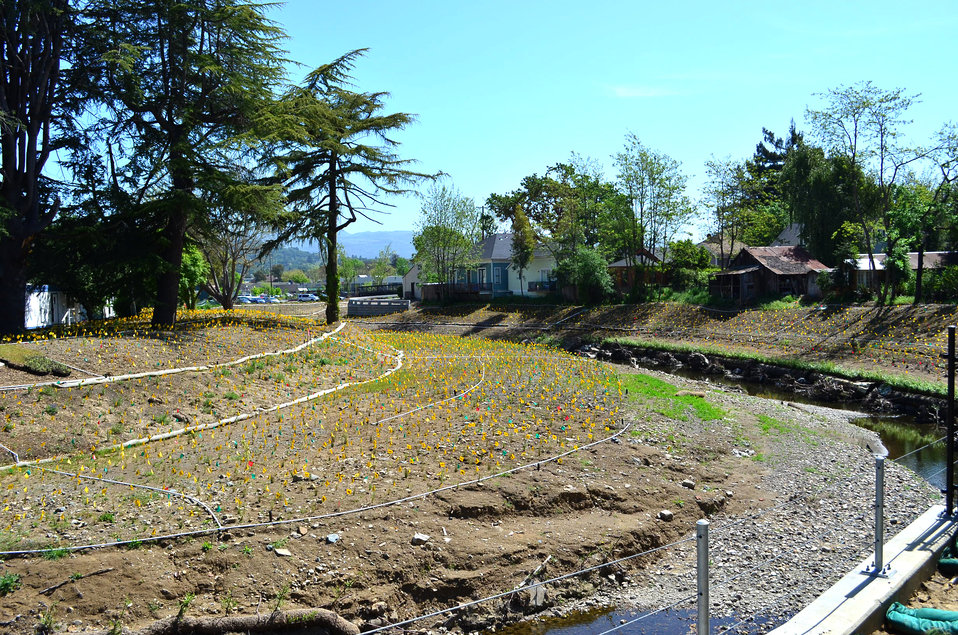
New pedestrian bridge last major phase of Corps’ Napa Creek project

New native species plantings, shown April 12, 2013, line the banks of Napa Creek in Napa, Calif. The plantings, along with tree trunks placed along the bank, will provide habitat for fish and other river species. The environmental restoration work is part of the $14.8 million Napa Creek Project, a joint effort of the U.S. Army Corps of Engineers, the city of Napa and the Napa Flood Control and Water Conservation District funded by the American Recovery and Reinvestment Act of 2009 to reduce flood risk for the city. As part of the project, the Corps also widened the creek and installed box culverts – tunnels large enough for a car to drive through – in October 2012 to help move flood water from the creek more quickly to the Napa River and away from homes and businesses. (U.S. Army photo by Tyler Stalker/Released) Watch the video: bit.ly/163l2Np